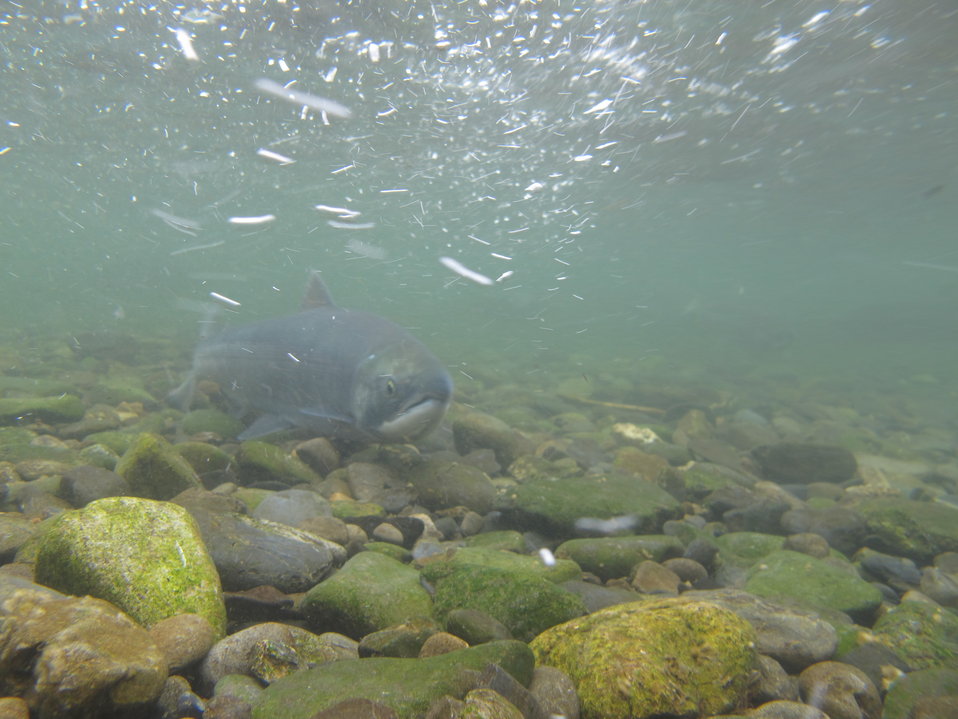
Russian River sockeye salmon

Sockeye salmon female migrating up the Russian River near its confluence with the Kenai River in June.